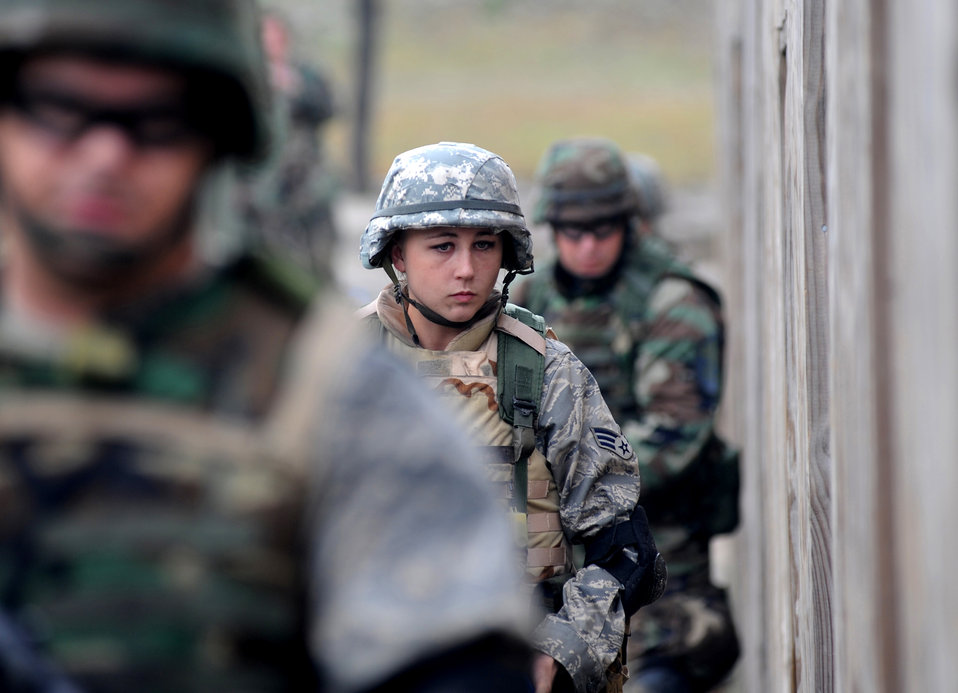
Learning the rules of engagement

Students partcipate in contingency skills basic training during Oct. 1 at Fort Dix, N.J. Air Force legal career field members learned rules of use of force, engagement and expeditionary basics for deployments. The training is held for three days prior to them attending the Advanced Contingency Skills Training Course taught by the Air Force Expeditionary Center's 421st Combat Training Squadron on Fort Dix.